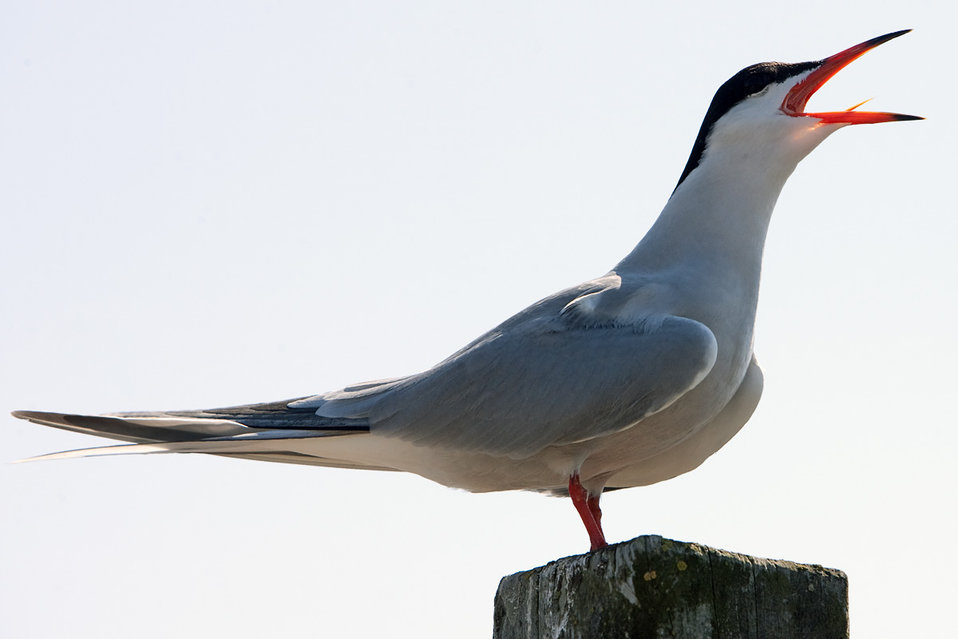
Common Tern

A common tern on Petit Manan Island, Maine Coastal Islands National Wildlife Refuge, Me.